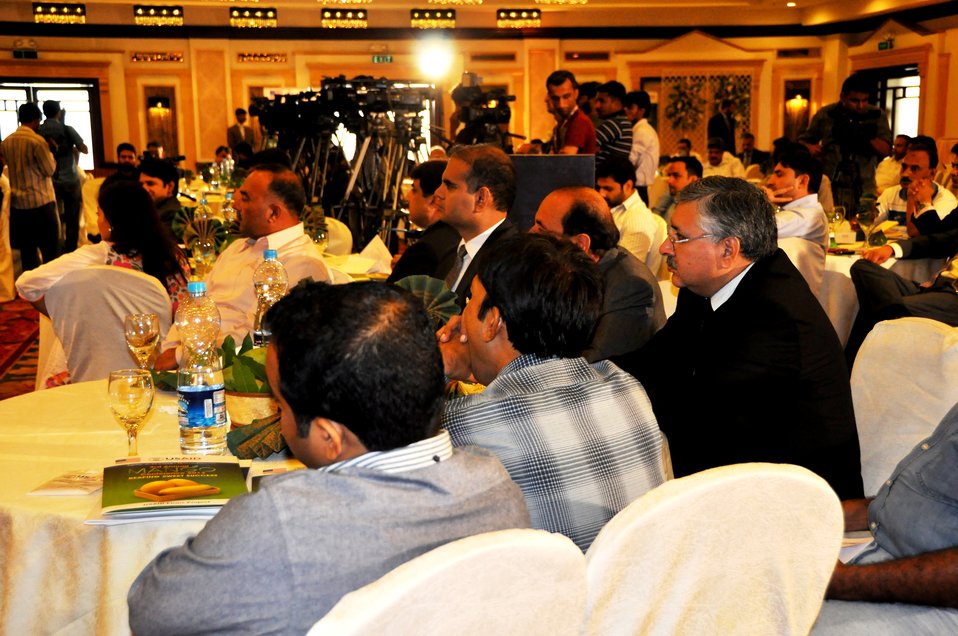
Mango Conference